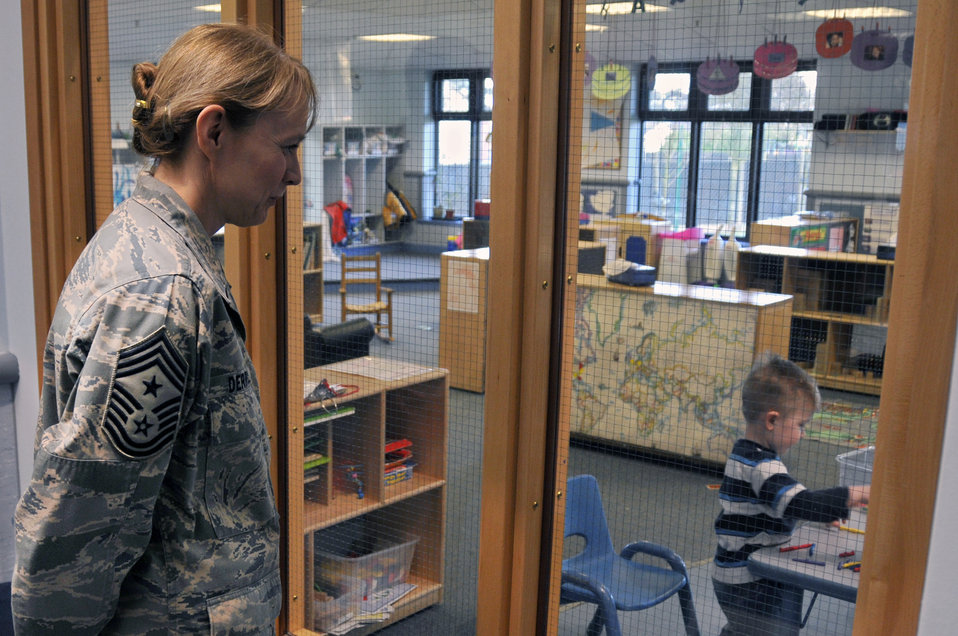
Command chief discusses Women's History Month

Chief Master Sgt. Pamela Derrow visits the new child development center March 25 at Royal Air Force Lakenheath, England. Chief Derrow visited RAF Lakenheath as a guest speaker for the Women's History Month luncheon, responded to Airmen's questions and concerns, and visited various units. Chief Derrow is the U.S. Air Forces in Europe command chief.